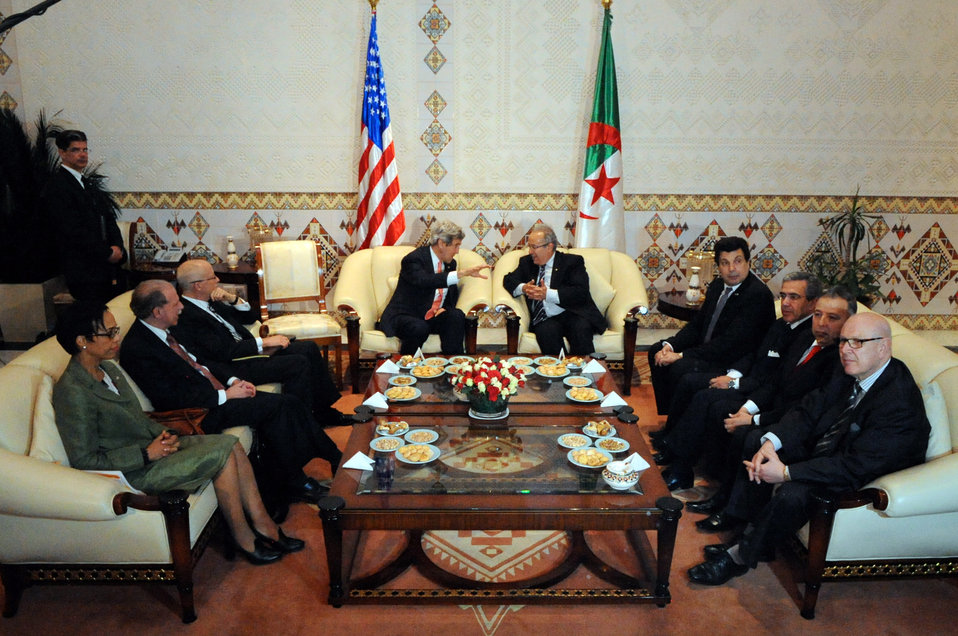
Algerians Welcome Secretary Kerry With Traditional Tea Ceremony

U.S. Secretary of State John Kerry and Algerian Foreign Minister Ramtane Lamamra sit side-by-side, flanked by their respective delegations, as the Algerian government welcomes the Secretary with a traditional tea ceremony upon his arrival in Algiers on April 2, 2014.